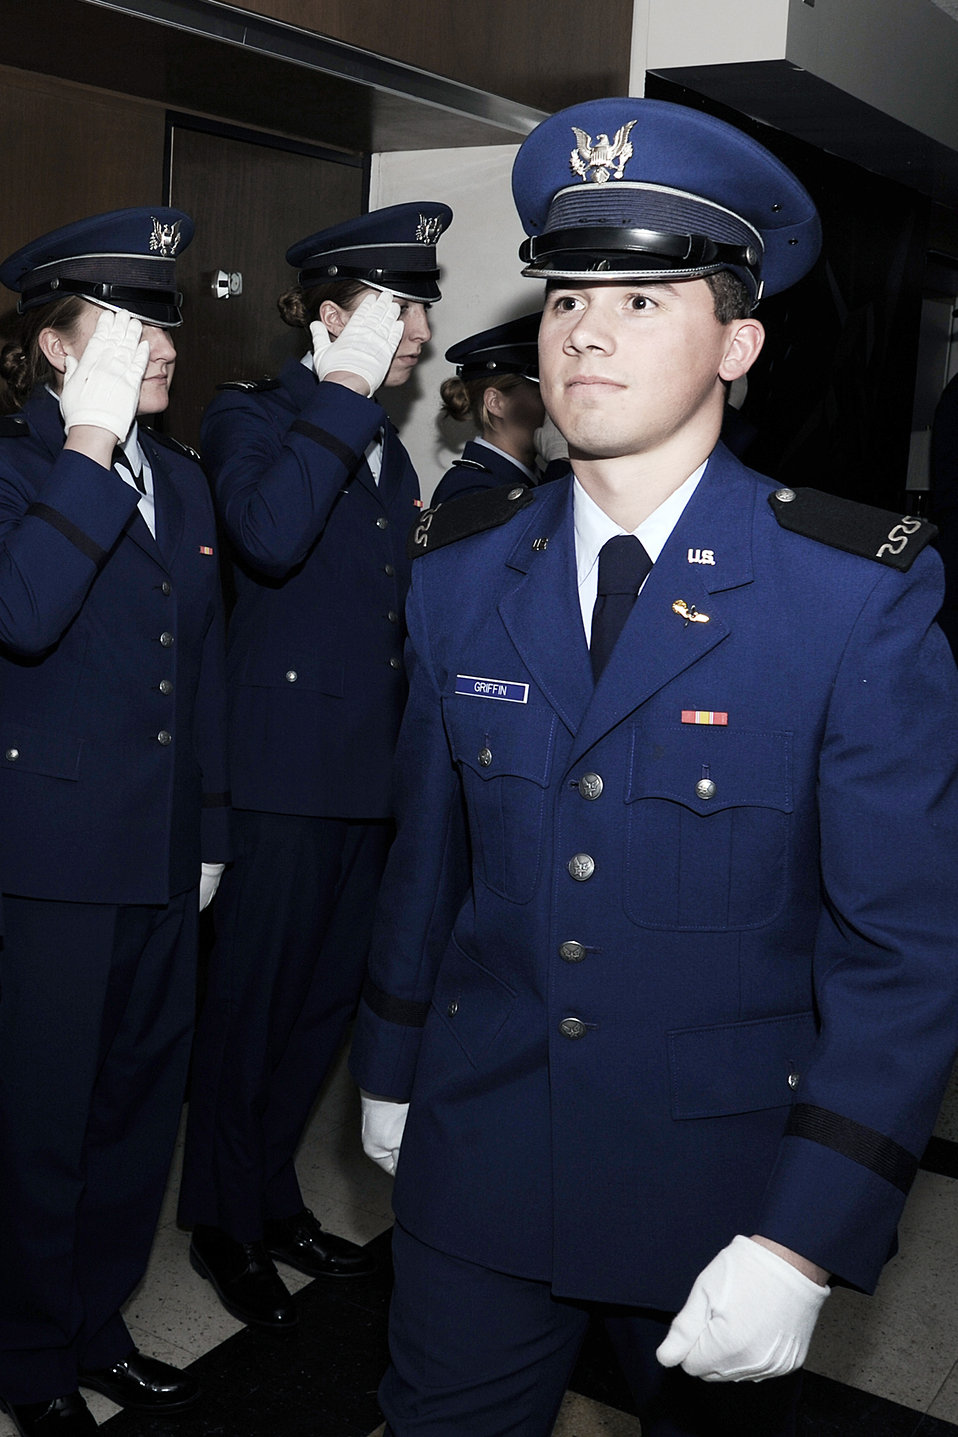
Academy freshmen attain status

Freshman Michael Griffin marches down the hallways of cadet squadron 18 as upperclassmen salute him in the time-honored tradition of the Props and Wings Ceremony March 13, 2010, during recognition events at the U.S. Air Force Academy, Colo. Recognition consists of several days of mentally and physically demanding activities, and culminates with the ascension of the freshmen into the ranks of upper class cadets.